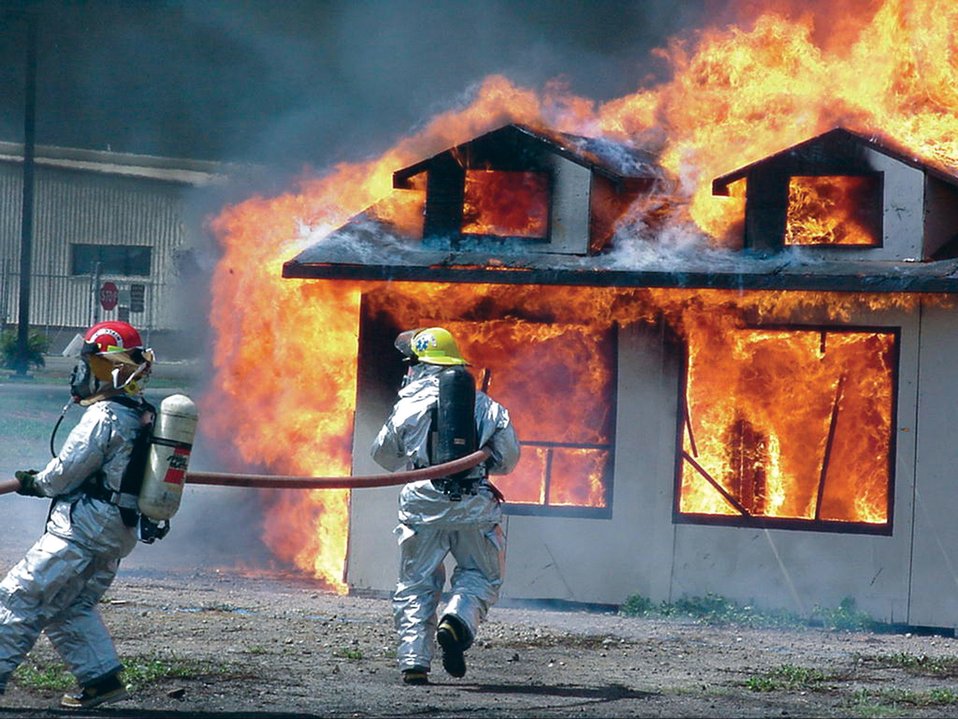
Don't play with fire

Firefighters from the 15th Civil Engineer Squadron Fire Protection Flight train on a deserted dwelling at Hickam Air Force Base, Hawaii. Safety officials remind people it doesn't take much to turn this training scenario into reality when people don't pay attention cooking or barbecuing.